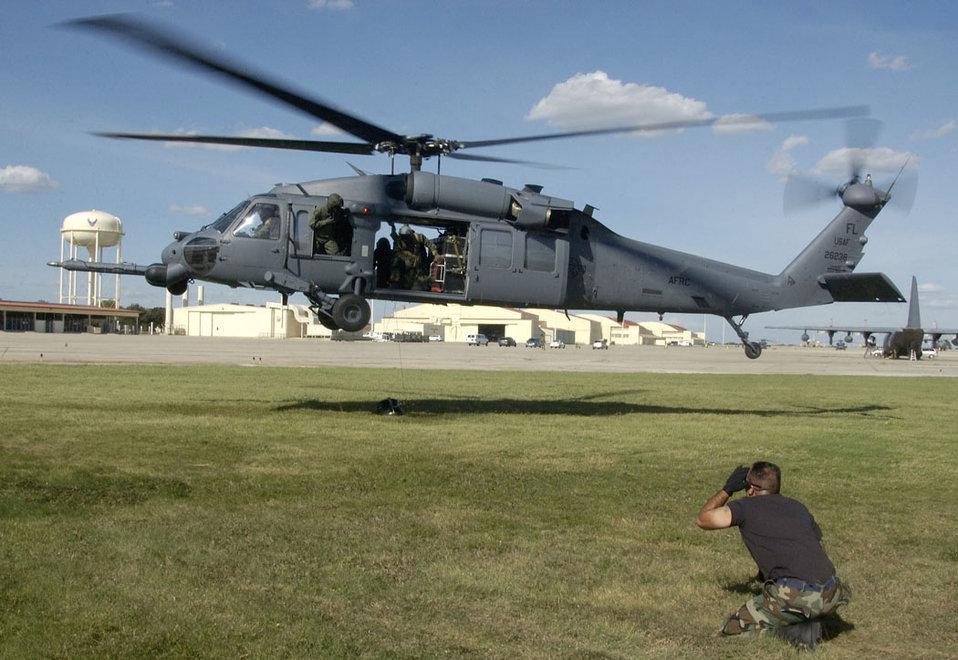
Search and rescue missions underway

RANDOLPH AIR FORCE BASE, Texas -- Senior Airman Ronald Arroyo awaits clearance to detach a 600-pound weight from the rescue cable of an HH-60 Pave Hawk after an operational test prior to its departure on a search and rescue mission over southern Texas Sept. 24. Airman Arroyo is a crew chief from the 920th Rescue Wing, Patrick Air Force Base, Fla.